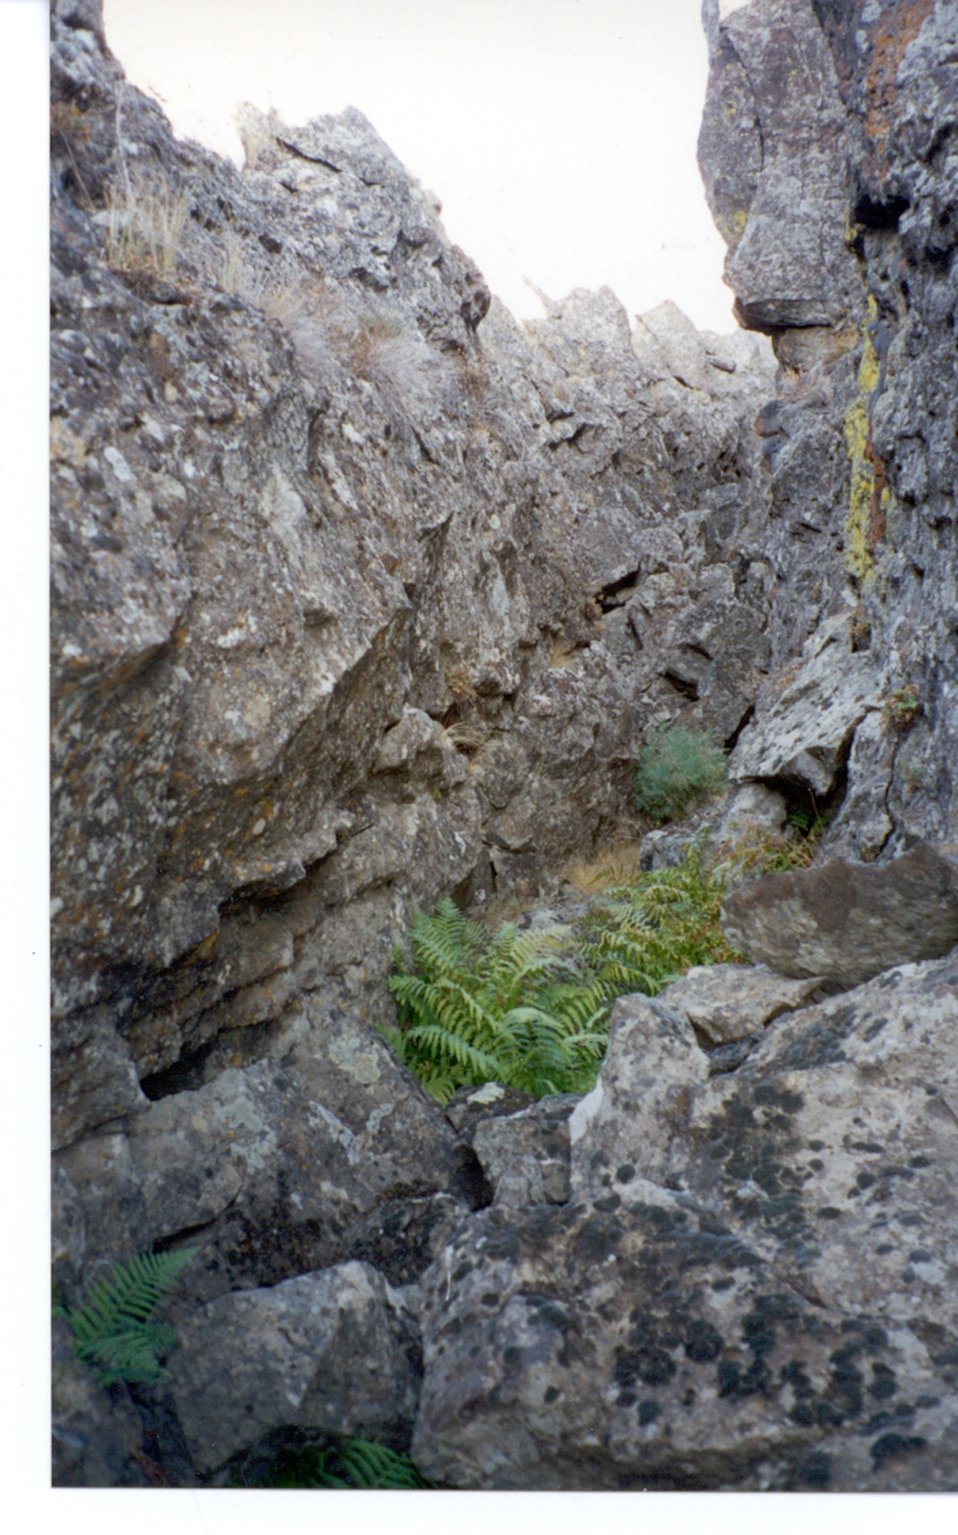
Craters of the Moon Shoshone Field Office USRD Upper Snake River District